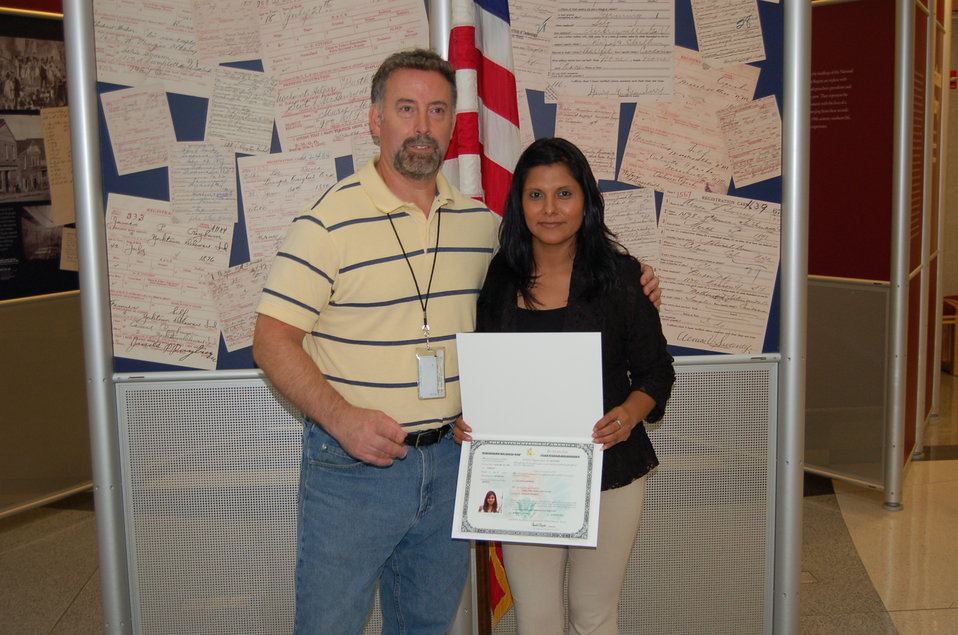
New Citizens